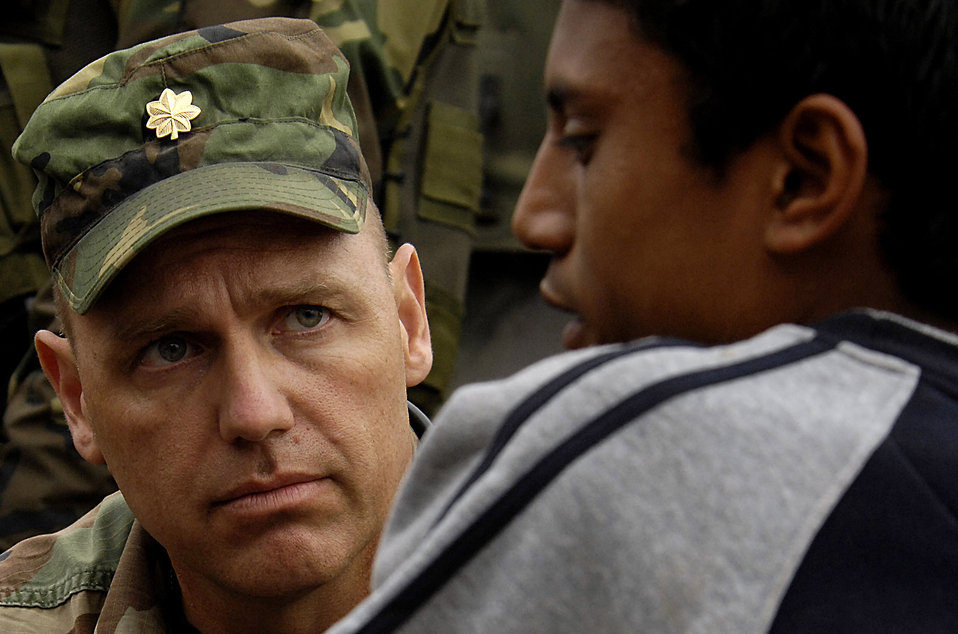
Tell me where it hurts

Pediatric nurse Maj. Joseph Hallock treats a young patient Aug. 20 in Pisco, Peru. The DOD deployed medical teams to Peru from Joint Task Force-Bravo at Soto Cano Air Base in Honduras to provide aid in the aftermath of an earthquake that struck the area Aug. 15.